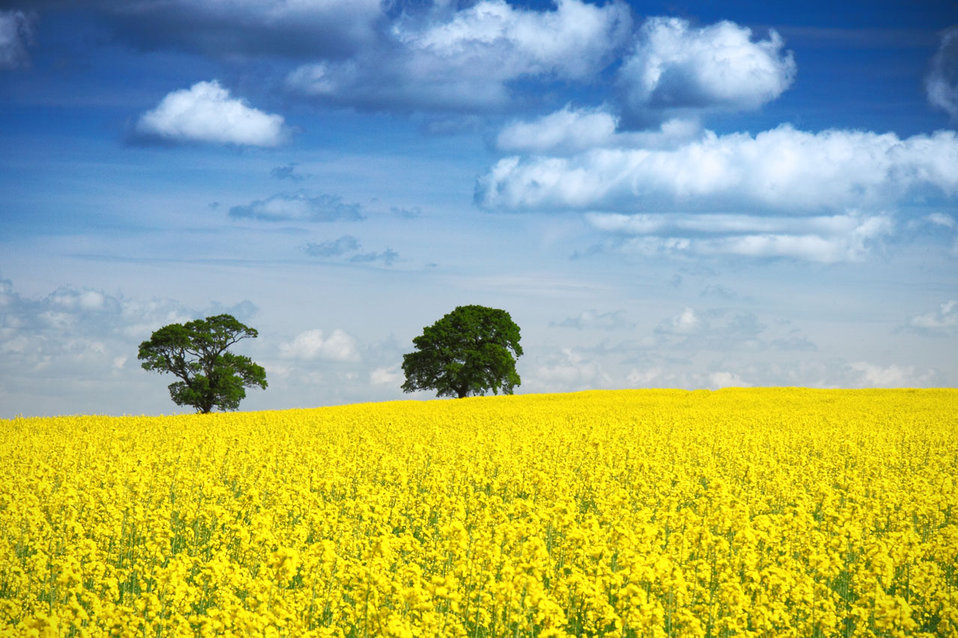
Tree in field

Two trees in rapeseed field.